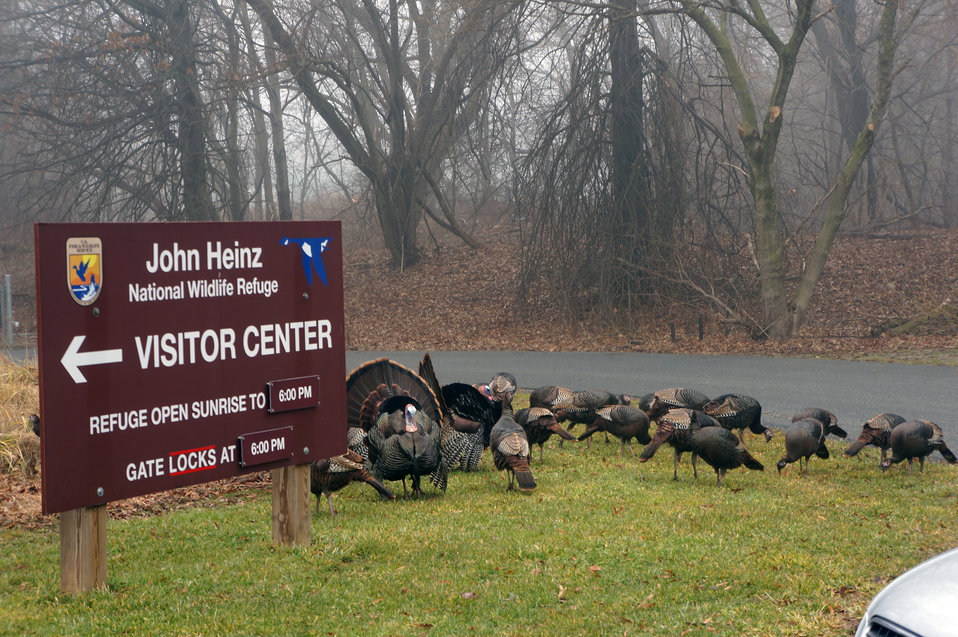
Photo of the Week - Turkeys (PA)

Photo of the Week - 11/25/2013

Flock of turkeys with male on display at John Heinz National Wildlife Refuge.

Much of the food and drink you enjoy on Thanksgiving and every day is the product of pollination. What would a traditional Thanksgiving feast look like without them? Click here to find out: www.youtube.com/watch?v=0yLZHVdKOZA

www.fws.gov/refuge/john heinz/